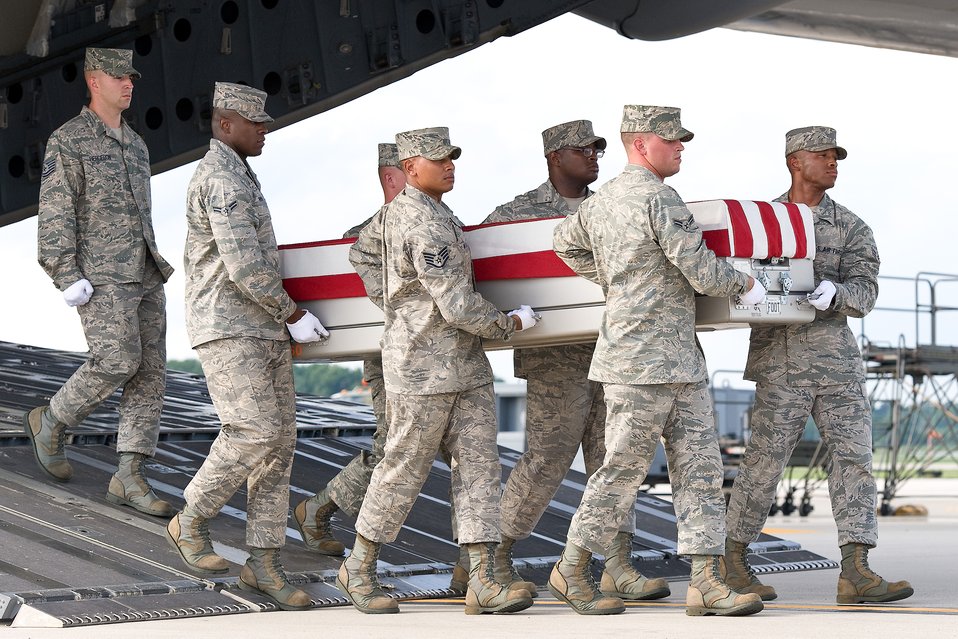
Dignified transfer at Dover AFB

A U.S. Air Force carry team transfers the remains of Maj. Walter D. Gray, of Conyers, Ga., at Dover Air Force Base, Del., Aug. 10, 2012. Gray was assigned to the 13th Air Support Operations Squadron, Fort Carson, Colo.